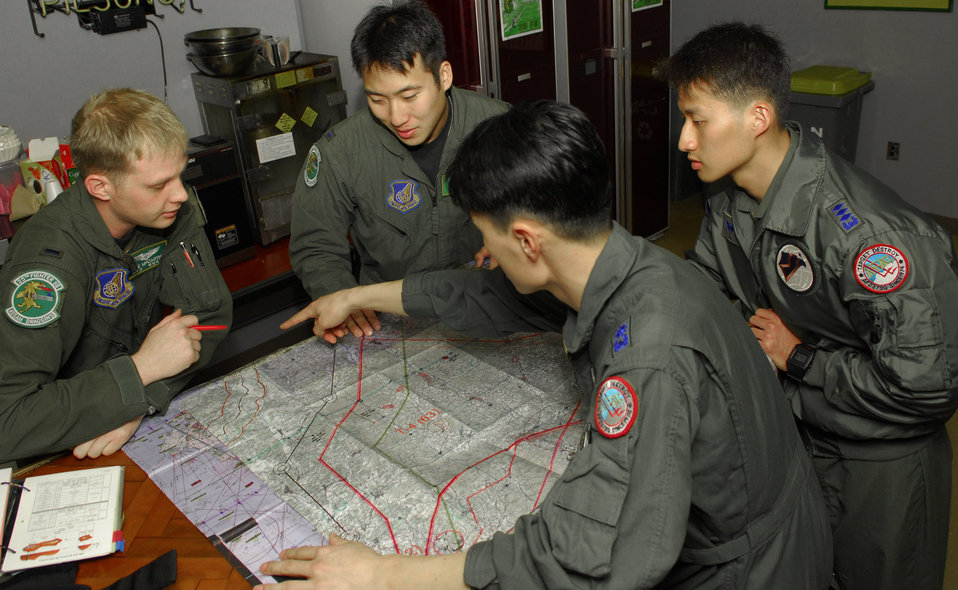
Squadron hosts 'Buddy-Wing' Program

First Lts. Mike McCarthy and Al Chang from the 25th Fighter Squadron at Osan Air Base, South Korea, discuss their flight plans as they prepare for an upcoming mission with Capt. Pak Chan-mu and Maj. Chong Hyaon-dong from the 15th Composite Wing at Seoul Air Base. The 51st Fighter Wing hosted a combined exchange exercise called the Buddy Wing Program this week, with the participation from the 25 FS here and the South Korean 15th CW. The aircrew members trained together allowing both units to introduce tactics and improve interoperability between the two countries.